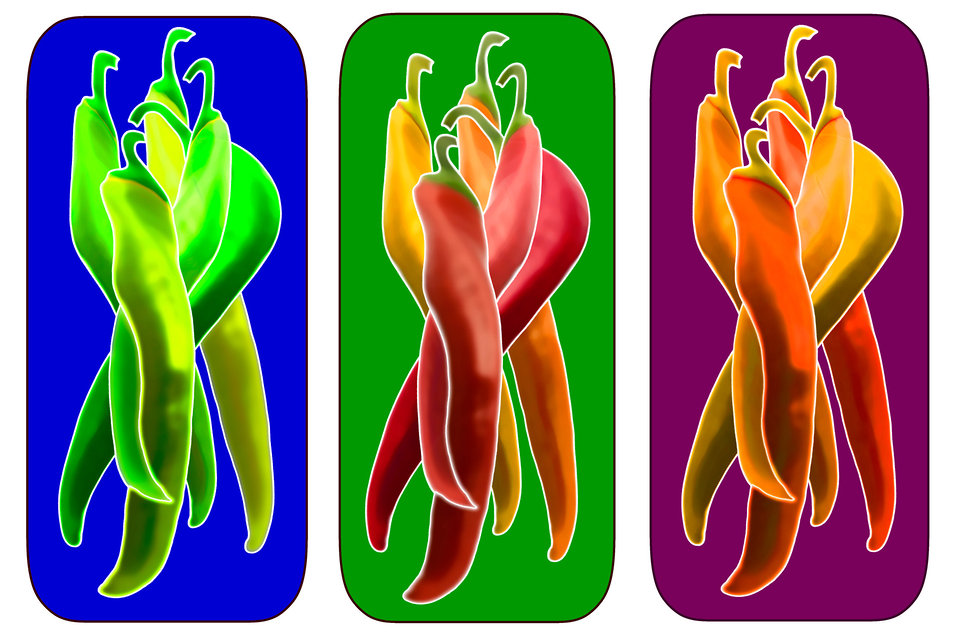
Chilies def

Illustration of chilies.